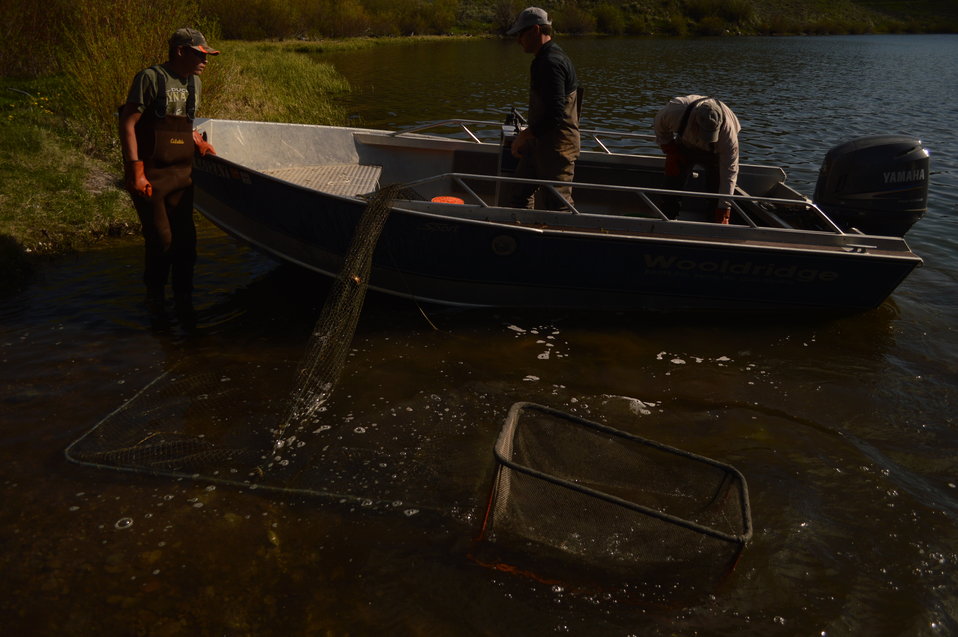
Regional Leadership Visit to Montana 2014